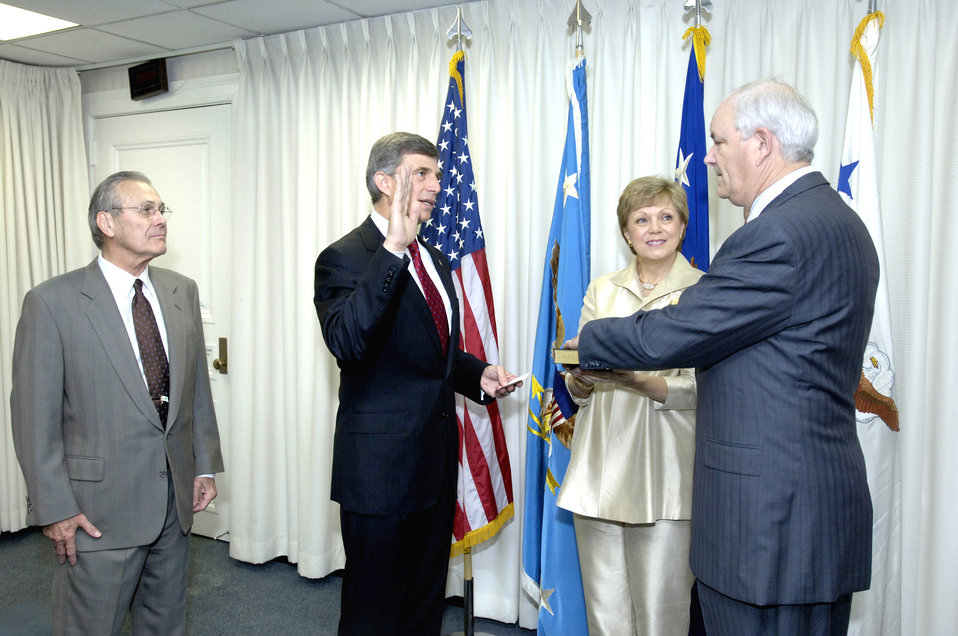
New SECAF

THE PENTAGON, Va. (AFPN) -- Secretary of Defense Donald H. Rumsfeld (left) looks on as Under Secretary of the Air Force Ronald M. Sega (second from left) administers the oath of office to newly-appointed Secretary of the Air Force Michael W. Wynne. Barbara Wynne stands by her husband and holds the Bible. Mr. Wynne was actually sworn-in during ceremonies at the U.S. Air Force Academy earlier this month, however, it was decided to hold another ceremony at the Pentagon to allow members of his family and his many Pentagon associates to share with him the joy of the appointment.